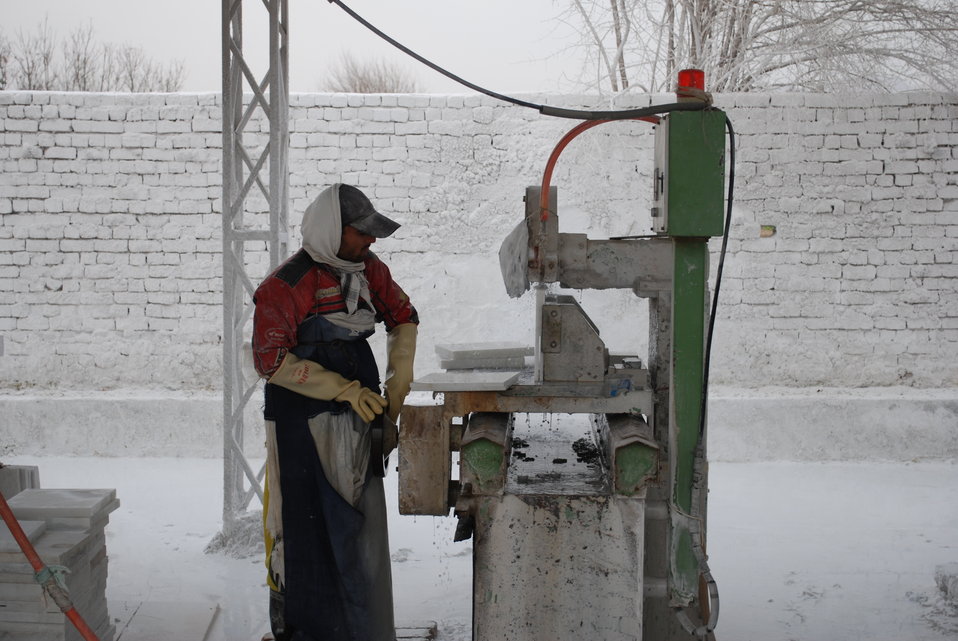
'On the Road' in Nangarhar Province